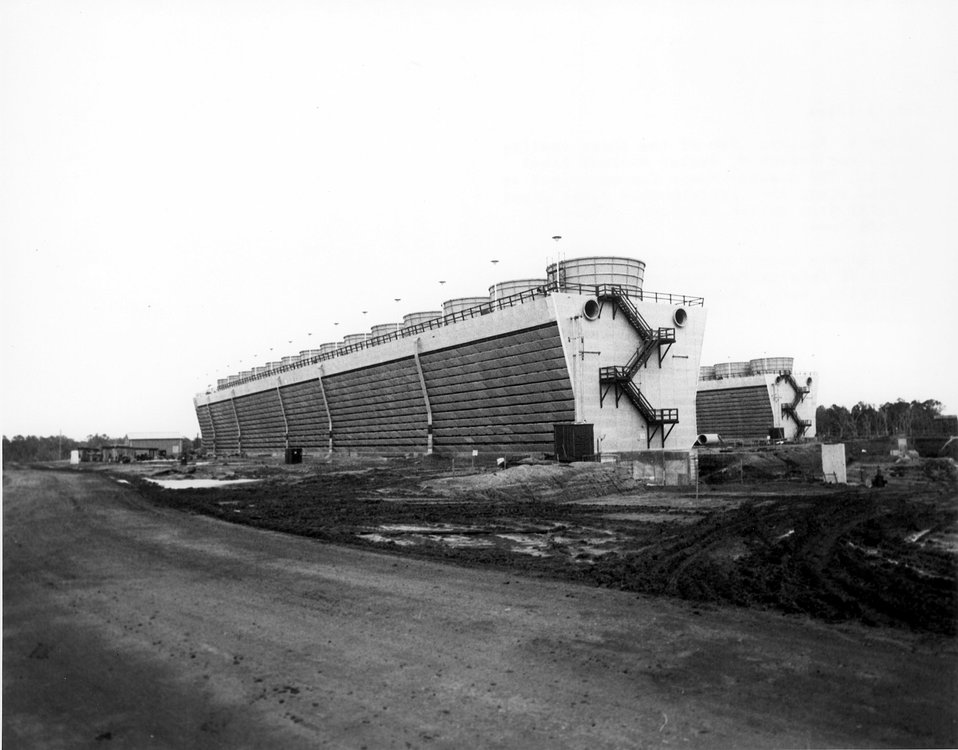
Two of the three cooling towers for Joseph M. Farley Nuclear Plant Unit 1.